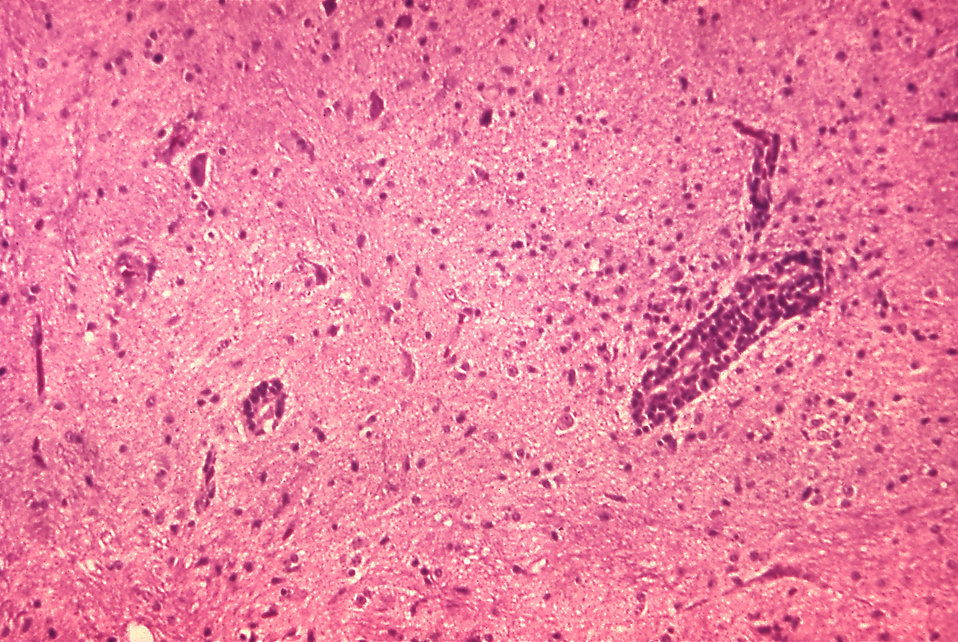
This micrograph depicts the histopathologic changes associated with rabies encephalitis prepared using an H&E stain.